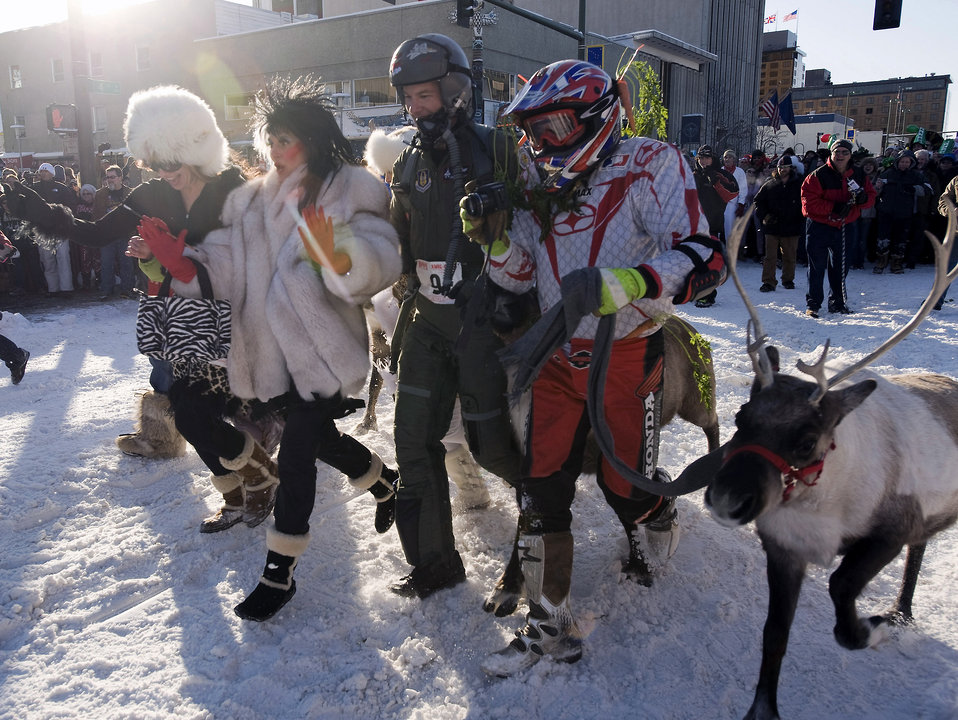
Santa's other reindeer

Colonel Eric Overturf and his wife, Karla Overturf, prepare to run through the streets of Anchorage during the 2nd Annual Running of the Reindeer March 1 in Alaska. Colonel and Mrs. Overturf ran in the celebrity heat running two city blocks with a herd of reindeer darting through the crowd. Colonel Overturf, an F-22 Raptor pilot, is the 477th Fighter Group commander at Elmendorf Air Force Base, Alaska.